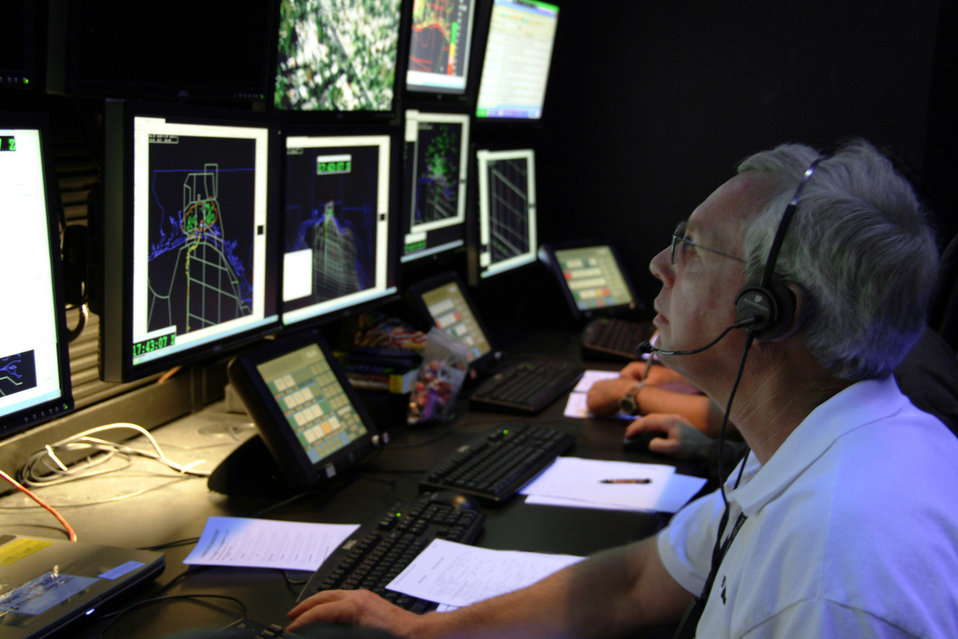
Check your 'six'

John Crane monitors the B-1B tail warning function test Feb. 25 at the Central Control Facility at Eglin Air Force Base, Fla. The tail warning function is a radar that faces the rear of B-1B to detect incoming missiles or aircraft. If detected the system can deploy defensive countermeasures. Mr. Crane is a 36th Electronic Warfare Squadron B-1B defense systems engineer.